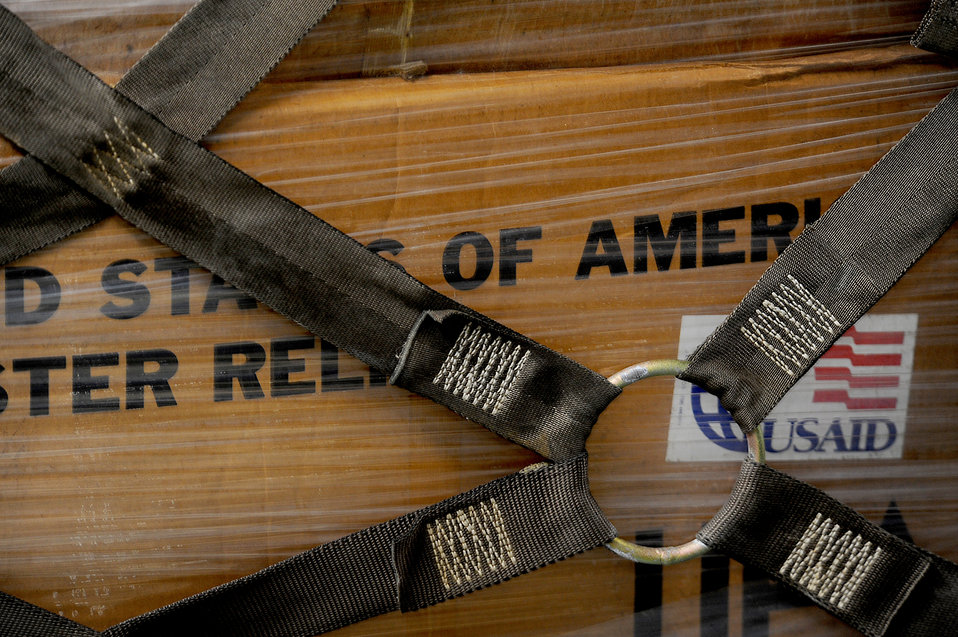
OPERATION TOMODACHI

5A U.S. Air Force C-17 III Globemaster sits on the flight line ready to off load earthquake relief supplies on March 13, 2011 at Misawa Air Base, Japan for Operation Tomodachi.